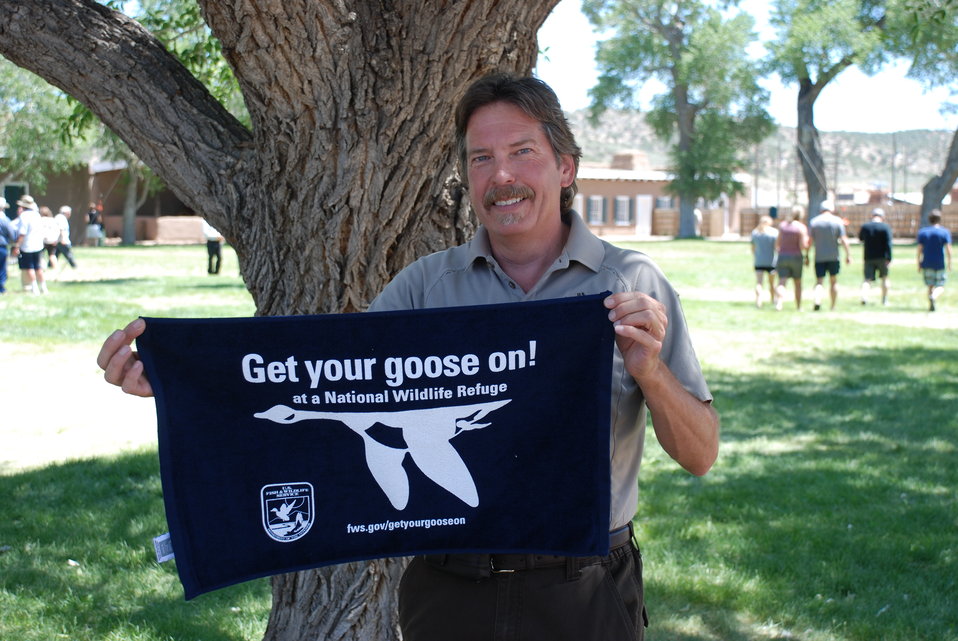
Pat Gonzales Gets His Goose On!